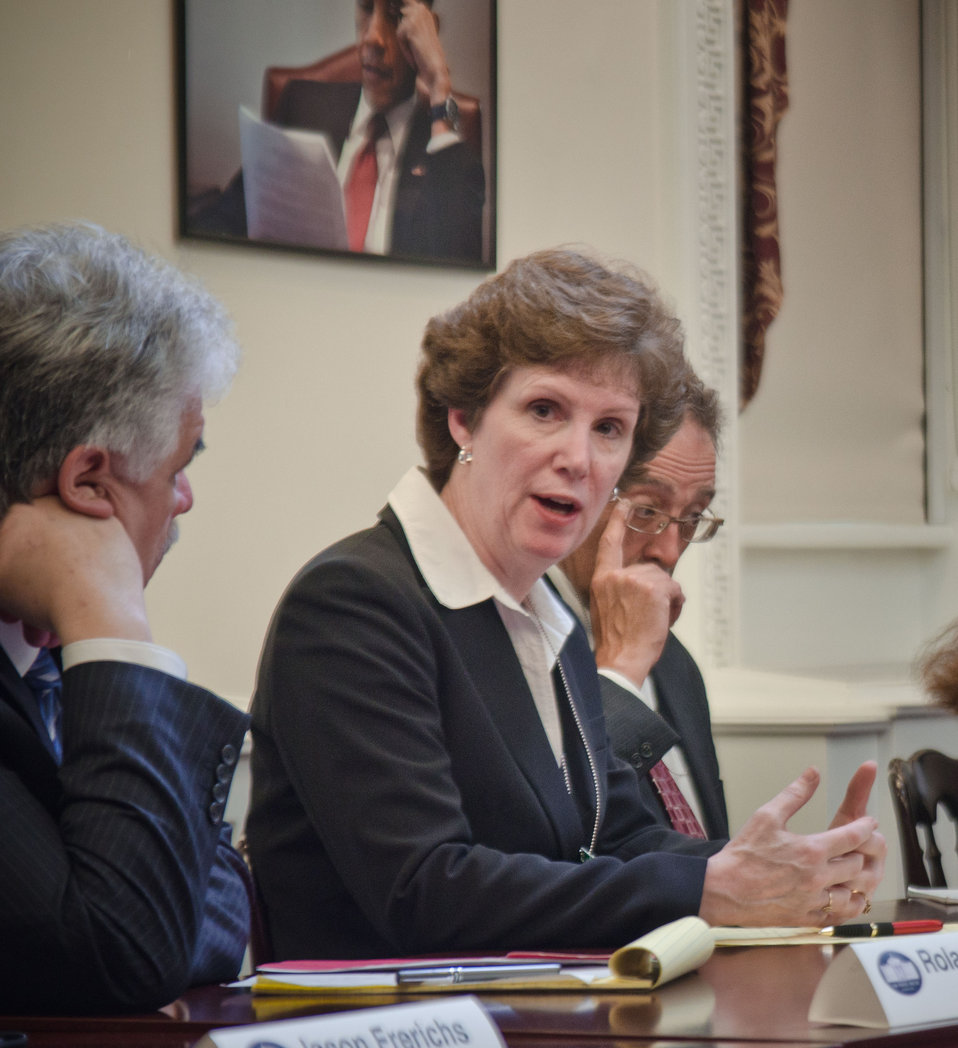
Sue Noble, Executive Director at the Vernon Economic Development Association in southwest Wisconsin, attended a meeting at the White House, in Washington, DC, on July 6, 2011. She was asked to participate along with President Barack Obama, Agriculture Secretary Tom Vilsack, the President's Domestic Policy Adviser Melody Barnes and rural communities leaders from across the country for the White House Rural Champions of Change event to strengthen rural communities and promote economic growth. Sue is the Executive Director at the Vernon Economic Development Association in southwest Wisconsin. She’s spearheading a remarkably comprehensive effort at economic development around local and regional food systems that has included both USDA and EDA support. In the past year she’s established a cooperative consisting of both producers, distributors, and buyers that are moving more healthy, local food into local institutions (UW-La Crosse, a local hospital) and is also in the beginning stages of refurbishing an abandoned industrial park into a food hub, providing a foundation for entrepreneurialism and innovation, and enterprise development.